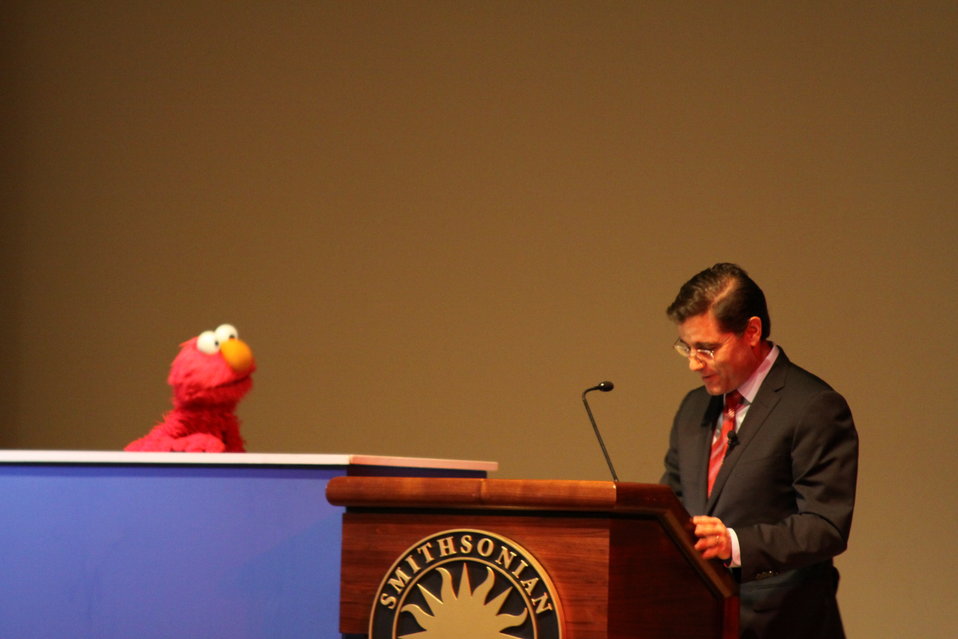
March 12, 2010- Smithsonian Broadband with Elmo